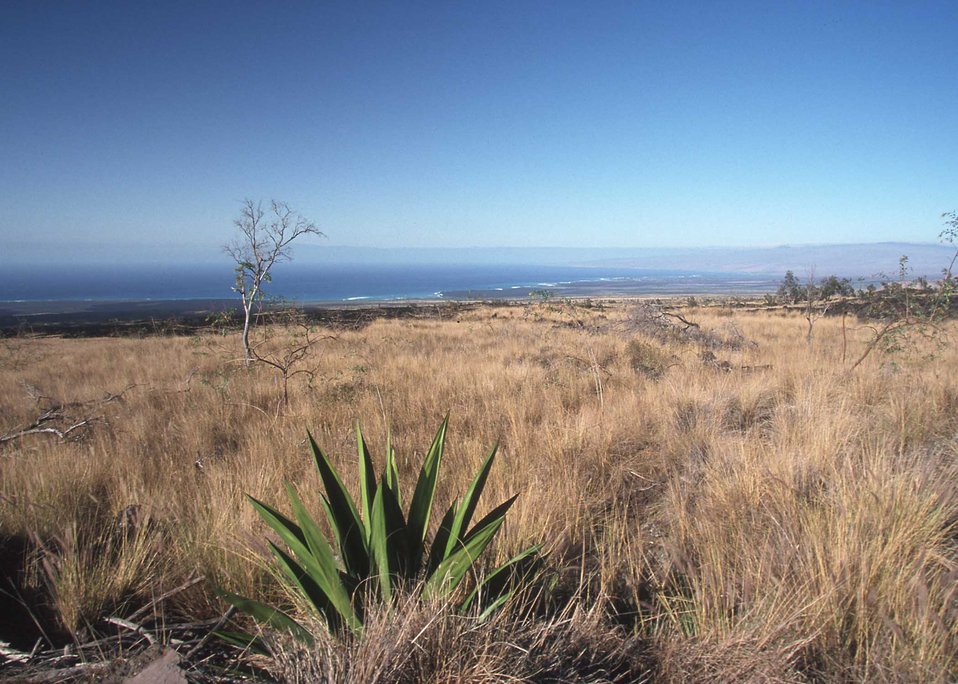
Scenic view of ocean on Hawaii.